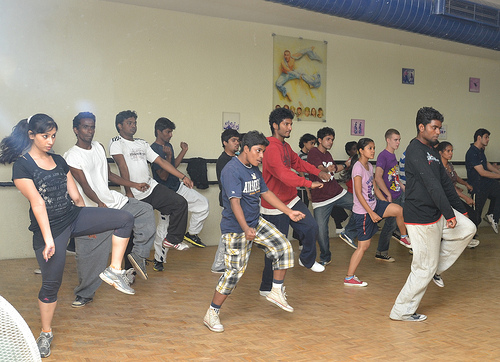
HaviKoro Hosts a Workshop

HaviKoro, an American breakdancing group, hosts a workshop in Chandigarh, India, on January 19, celebrating the sixth anniversary of the American Corner in Chandigarh.